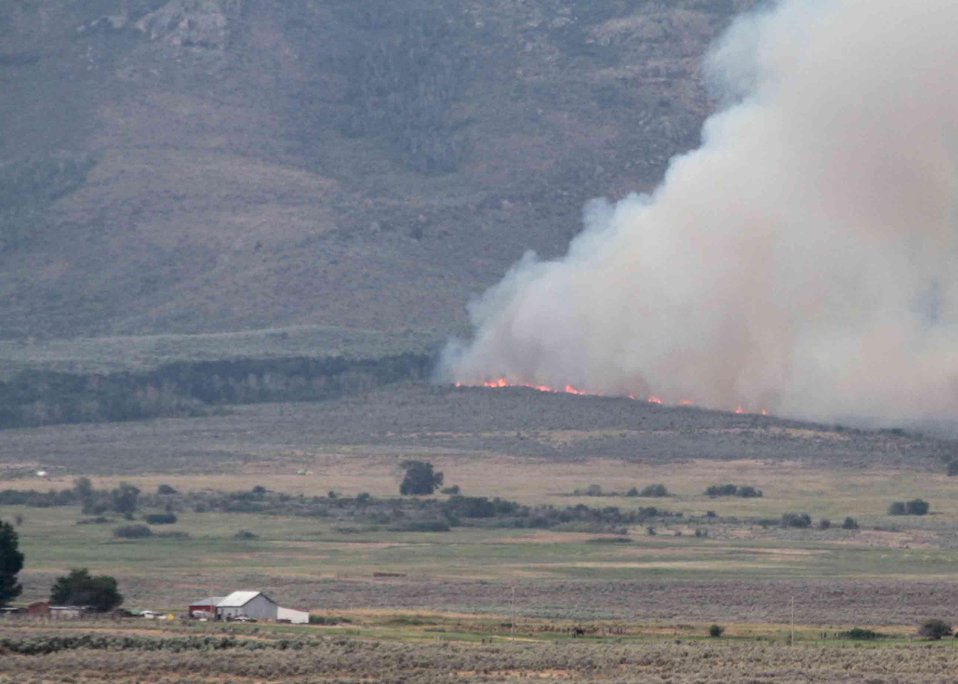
The Smith Ranch Fire located 10 miles northwest of Jiggs, NV began on Jul. 19, 2013 by lightning and has consumed approximately 2,759 acres. The Smith Ranch Fire is 100% contained.